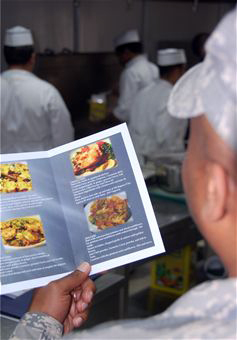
Airmen get first-hand insight to favorite meal

An Airman looks over a recipe for Aloo Gobi as he watches the Falcon Cafe staff prepare the Indian side dish April 6, 2010, during a cooking class at an air base in Southwest Asia.